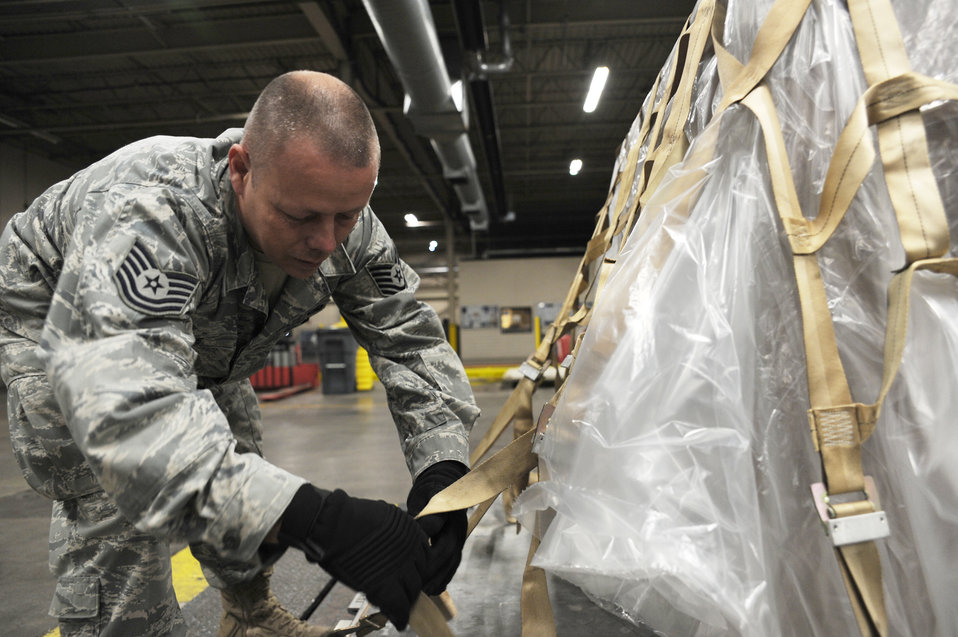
Charleston Airmen ship emergency funds to U.S. Embassy in Haiti

Tech. Sgt. Tim Crowe ties down pallet supporting more than 800 pounds in U.S. currency Jan. 22, 2010, at Charleston Air Force Base, S.C. The package contained a large amount of money to support the U.S. Embassy in Port-au-Prince, Haiti. Sergeant Crowe is a special handling supervisor with the 437th Aerial Port Squadron.